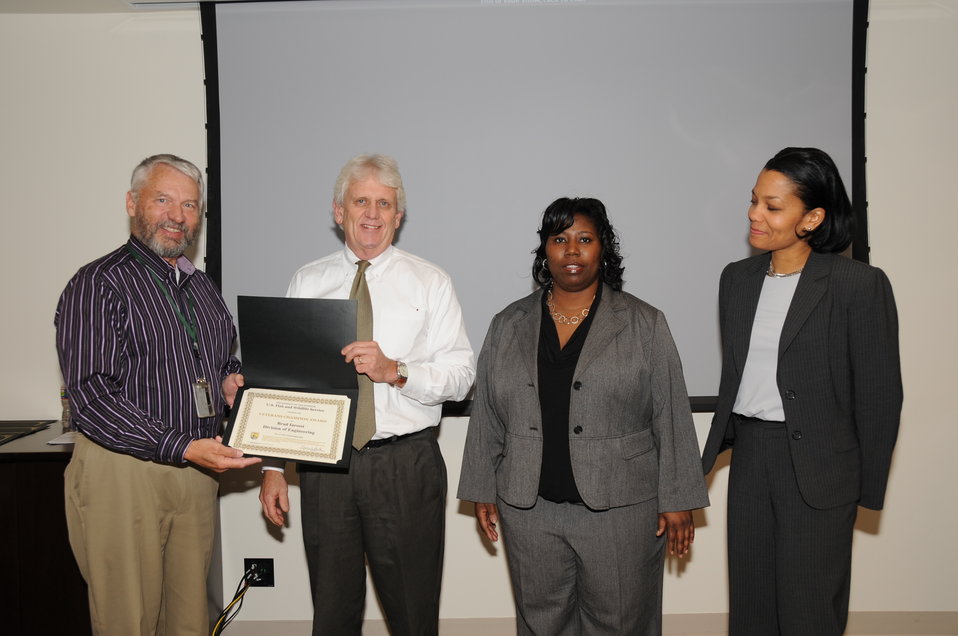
Honoring and Celebrating our Veterans

11.07.2012 Employees gathered in the Arlington Office to honor FWS Veterans